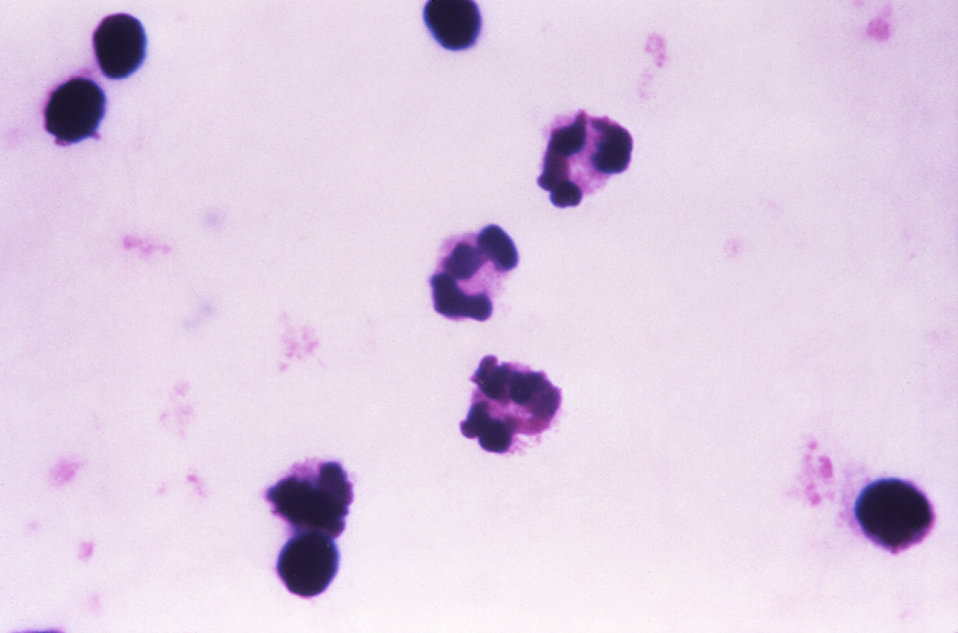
This thick film Giemsa stained micrograph reveals a number of white blood cells (WBC) and platelet clusters.